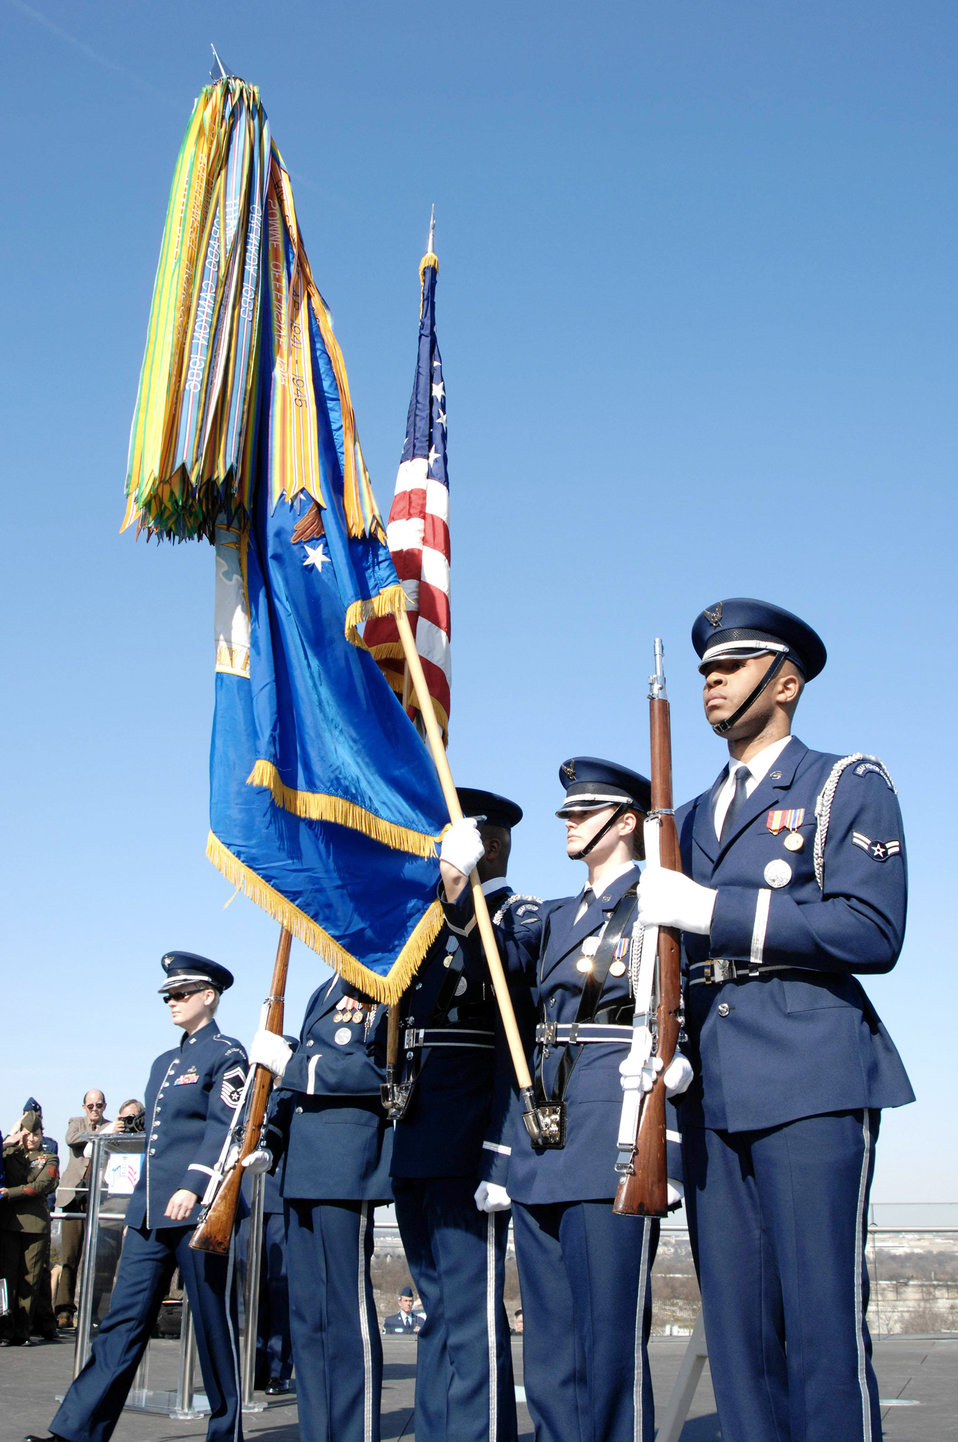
Female World War II pilots lay wreath at Air Force Memorial

Members of the Air Force Honor Guard post the colors for a Women Airforce Service Pilots ceremony during a wreath-laying ceremony March 9, 2010, in Arlington, Va., to honor the 38 WASP that lost their lives in the line of duty.